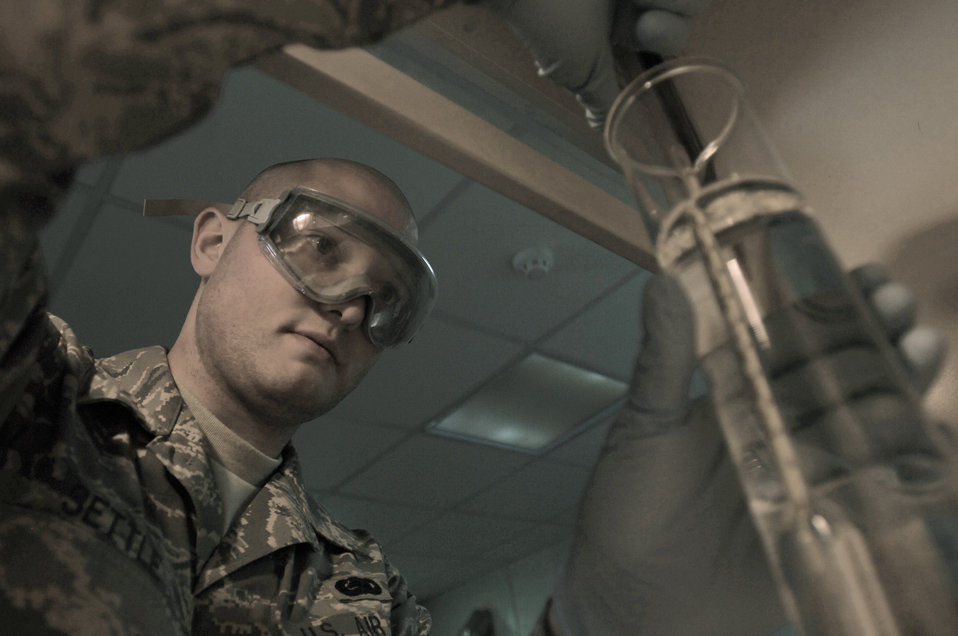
Fueled to fight

Staff Sgt. Frederick Settle examines the reading on the hydrometer during a fuels gravity test Feb. 27 in Southwest Asia. The fuels management flight is responsible for inventorying the fuel daily, and the transfer and issue of fuel to both vehicle operators and aircrews in support of operations Enduring Freedom and Iraqi Freedom. Sergeant Settle is a fuels lab technician from the 386th Expeditionary Logistics Readiness Squadron.